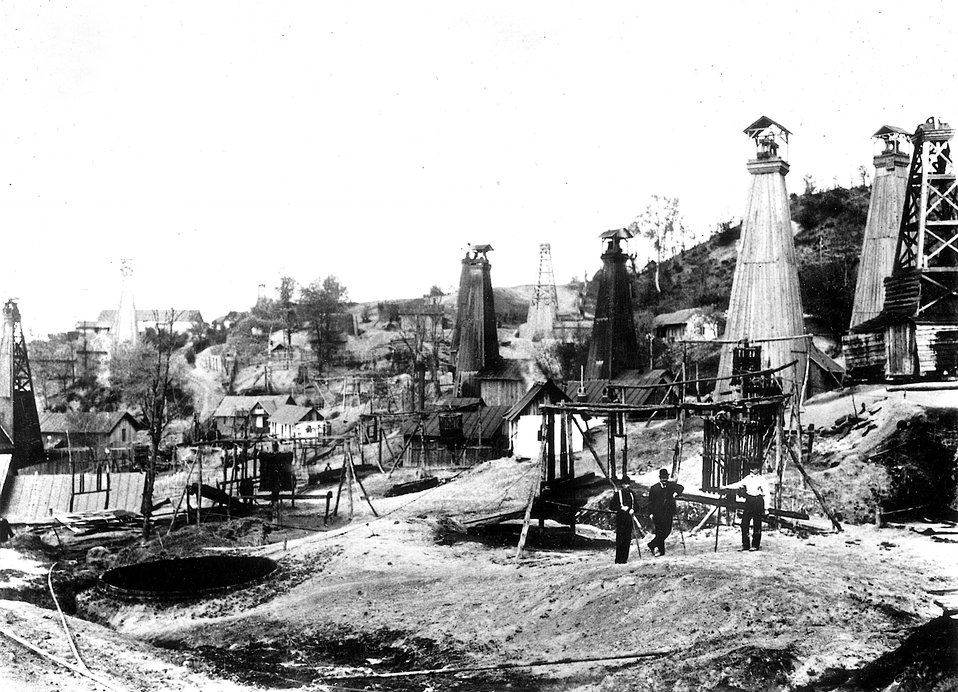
Early oil field. c. undated